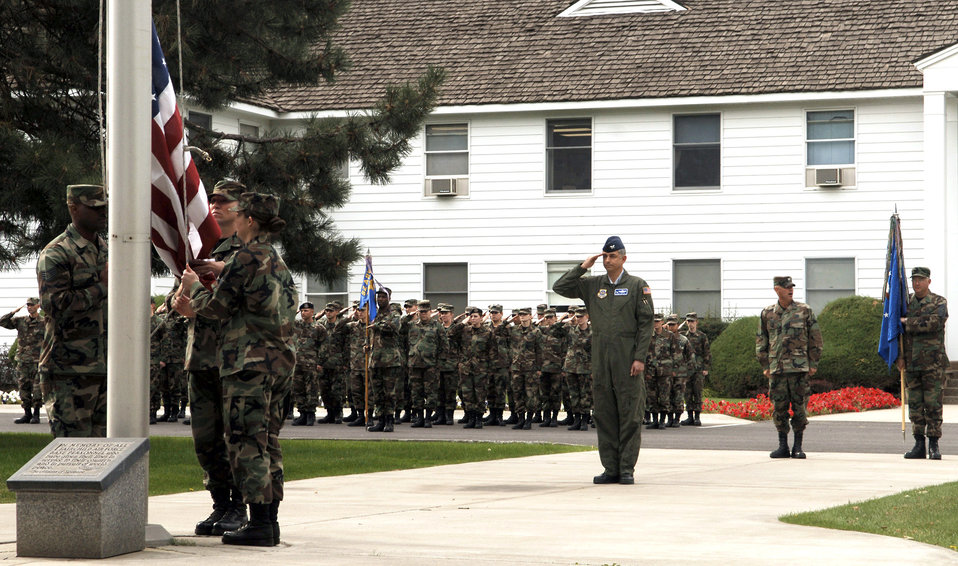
Fairchild celebrates Air Force's 60th

In recognition of the Air Force's 60th birthday, members representing the 92nd Air Refueling Wing salute the flag during a retreat ceremony Sept. 18 at Fairchild Air Force Base, Wash.